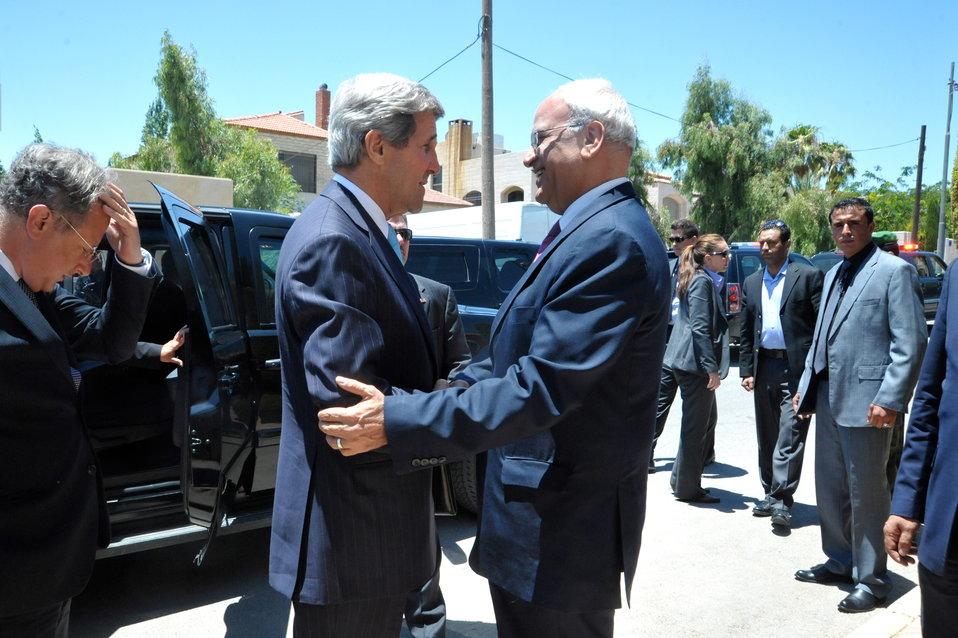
Secretary Kerry Meets With Palestinian Authority Chief Negotiator Erekat

U.S. Secretary of State John Kerry is greeted by Saeb Erekat, chief negotiator for the Palestinian Authority, before a meeting in Amman, Jordan, on June 28, 2013.